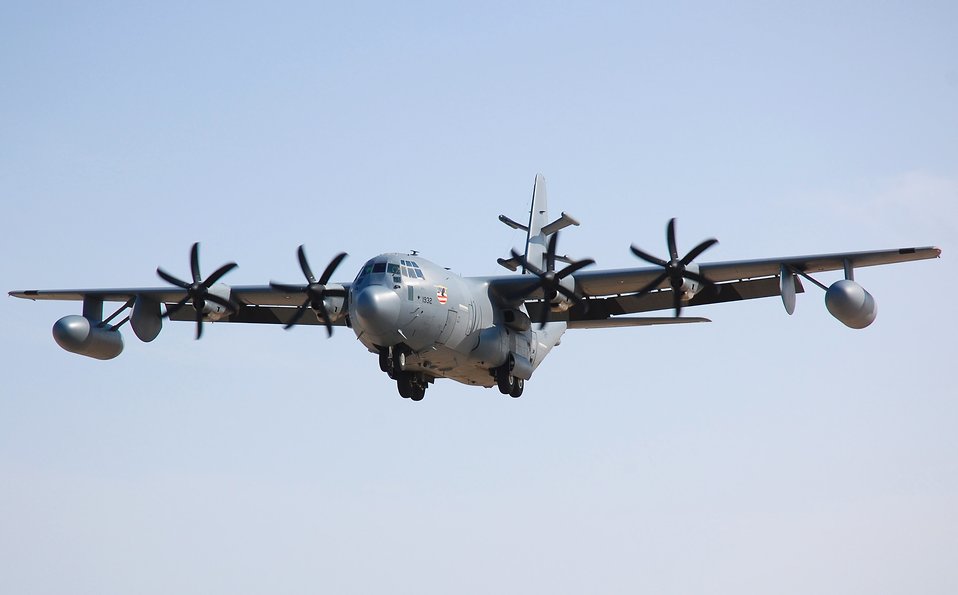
Commando Solo: Impacting the hearts and minds

An EC-130J Commando Solo aircraft prepares to land at an air base in Southwest Asia. The EC-130J conducts information operations, psychological operations and civil affairs broadcasts in the AM, FM, HF, TV and military communications bands.